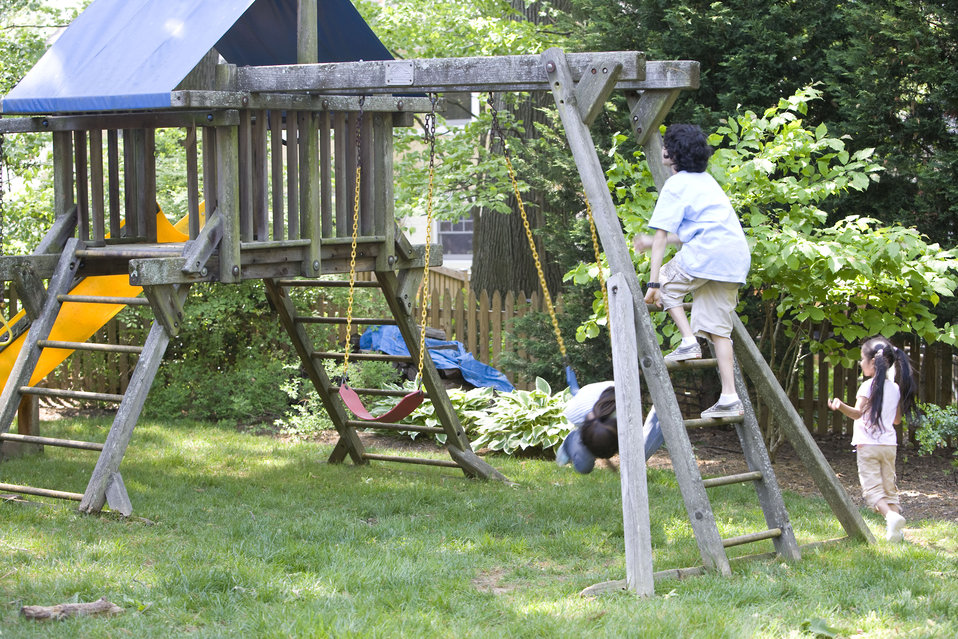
Children love playing outside, and these children were thoroughly enjoying their wooden swing set, and all were having fun in the fresh outdoor air, and the beautiful weather. It's important to note that older wooden playsets may have been treated with arsenic and/or creosote, and therefore, parents need to know if these chemicals were used in their manufacture.